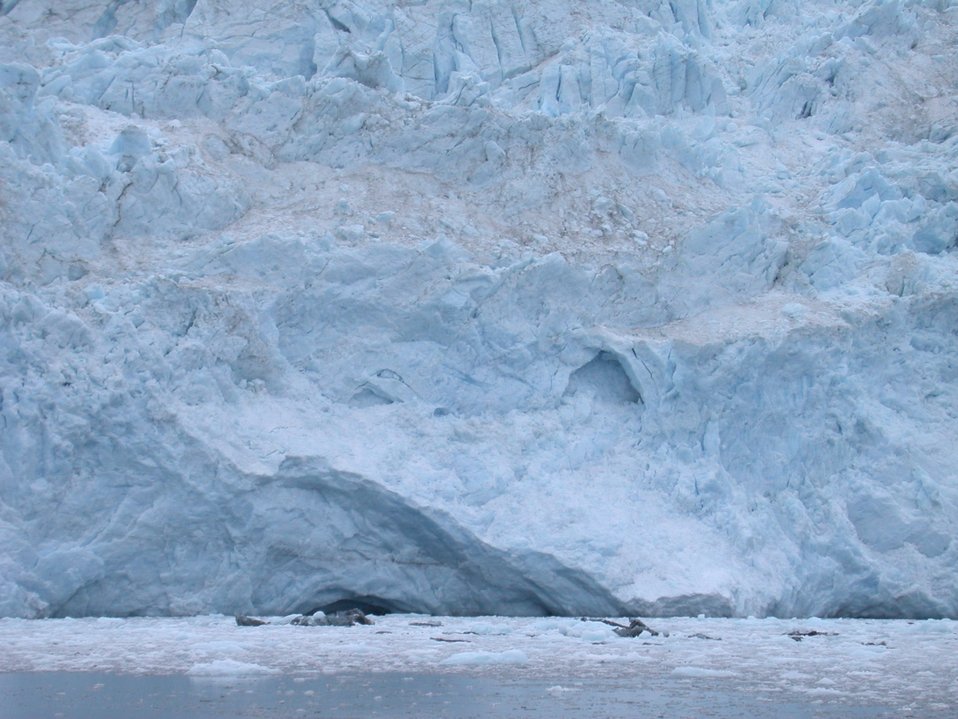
Aialik Glacier in Kenai Fjords.